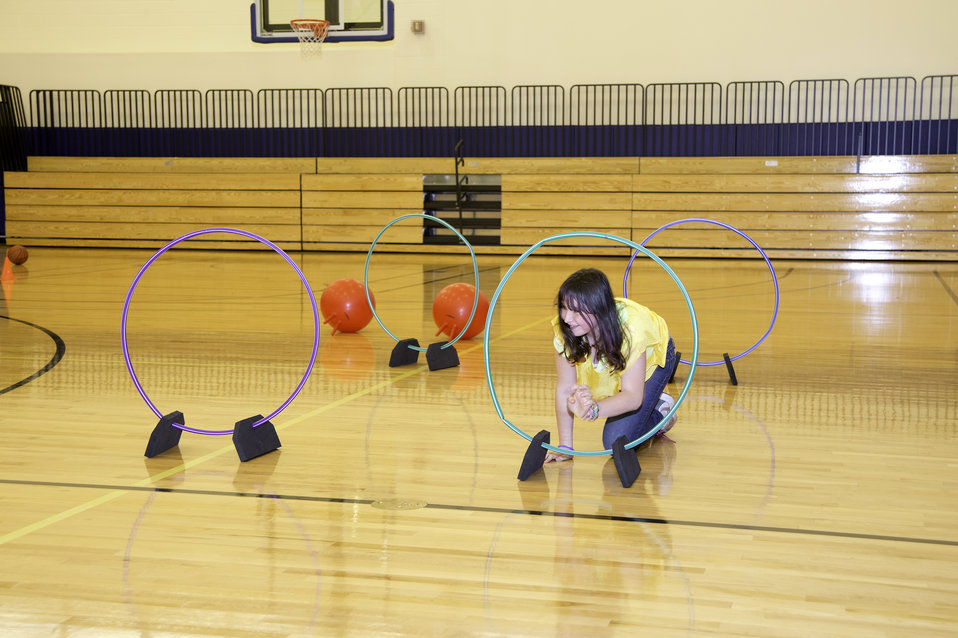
Mohegan youth enrolled in after-school program participate in physical activities at the Mohegan Tribe Community Center and Government Building in Uncasville, CT on Nov. 18, 2013. A U.S. Department of Agriculture (USDA) Rural Development (RD) Community Facility Loan was provided to the Mohegan Tribe for the construction of the Mohegan Tribe Community Center and Government Building in Uncasville, CT. USDA’s RD Community Facilities Programs makes and guarantees loans to develop essential community facilities in rural areas and towns of up to 20,000 in population. Loans and guarantees are available to public entities such as municipalities, counties, parishes, boroughs, and special-purpose districts, as well as to non-profit corporations and tribal governments. The 160,000 square foot building Center hosts an exhibit celebrating federal recognition, history of Mohegan Chiefs, a new Library and Archives space, new Arts and Crafts room, a new gymnasium, and a new community room to enjoy food and family. The Center will continue the Tribe’s plan for growth and meeting the needs of its members.